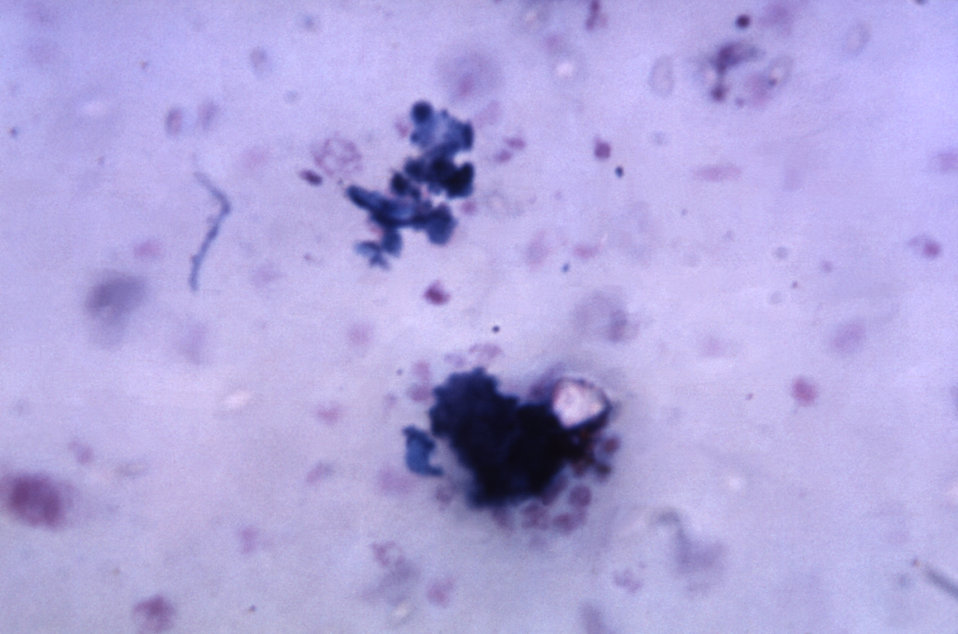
Magnified 1125X, this poorly-processed thick film photomicrograph of a blood smear, revealed an artifactual finding, which in this case was a precipitated stain patch.